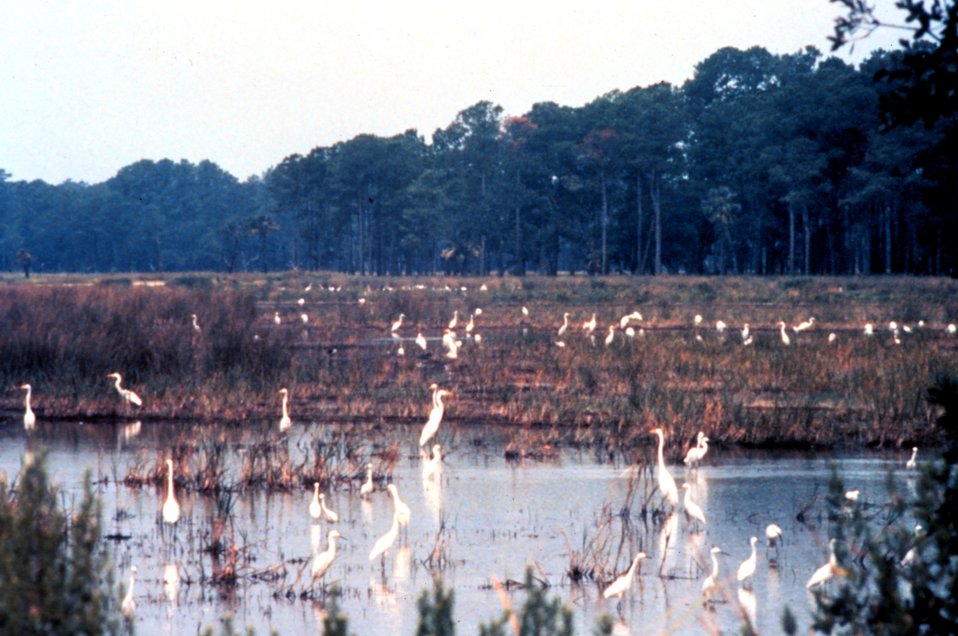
ACE Basin National Estuarine Research Reserve. An impoundment on Bear Island with many great egrets and common egrets.